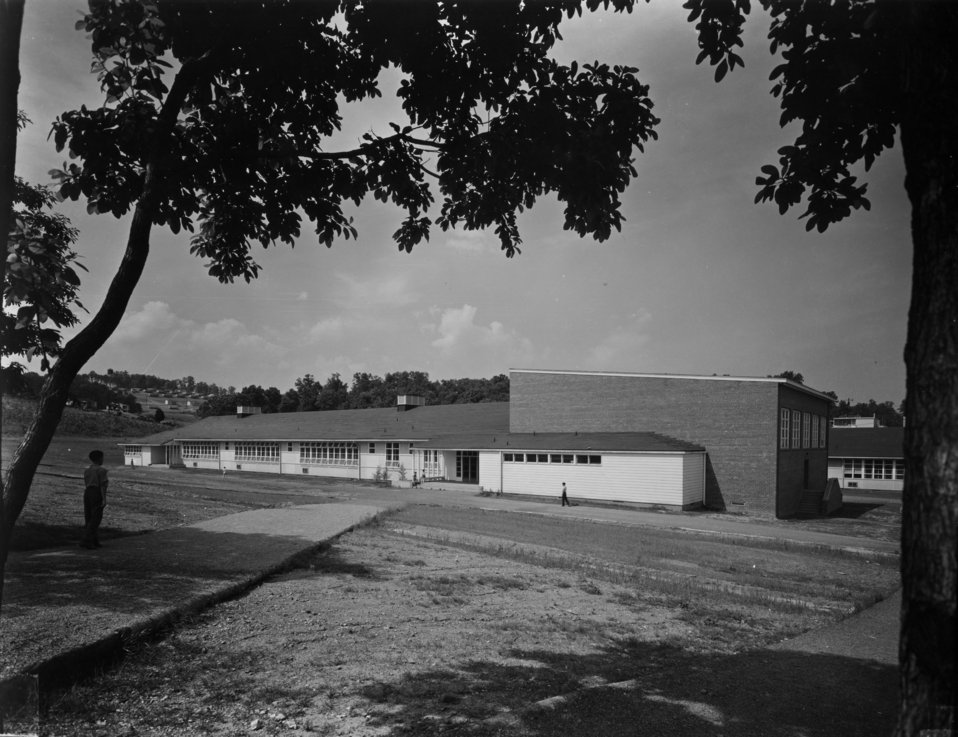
Schools at Oak Ridge